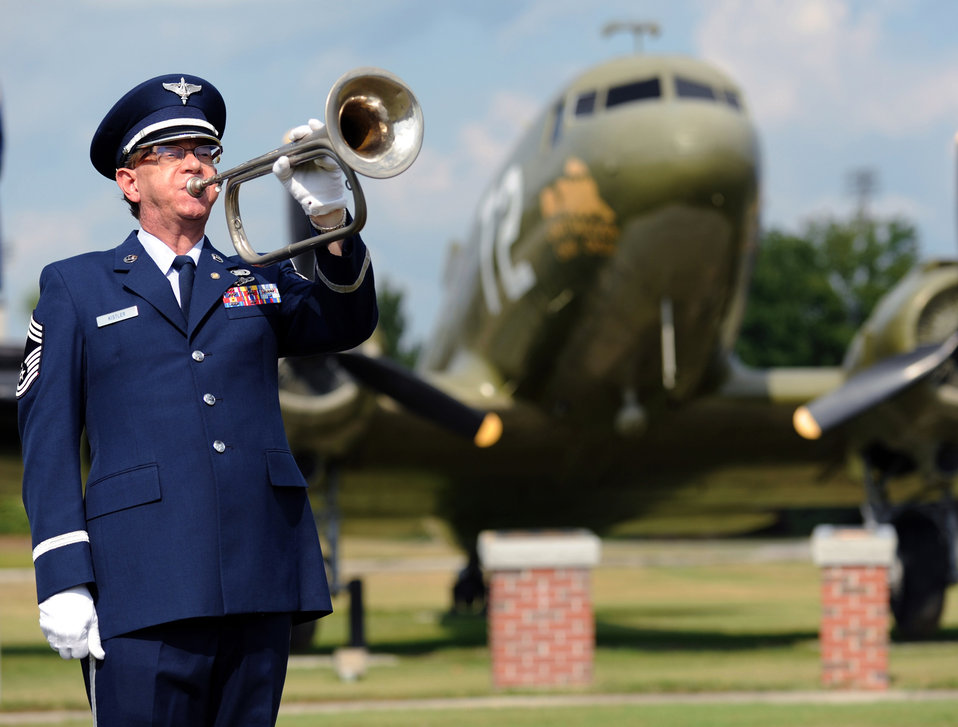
Solemn remembrance

Retired Chief Master Sgt. Thomas Kistler plays 'Taps' at the close of the Prisoner of War/Missing in Action retreat ceremony on Joint Base Charleston, S.C., Sept. 17, 2010. Chief Kistler served 29 years as an Air Force band member playing the tuba.